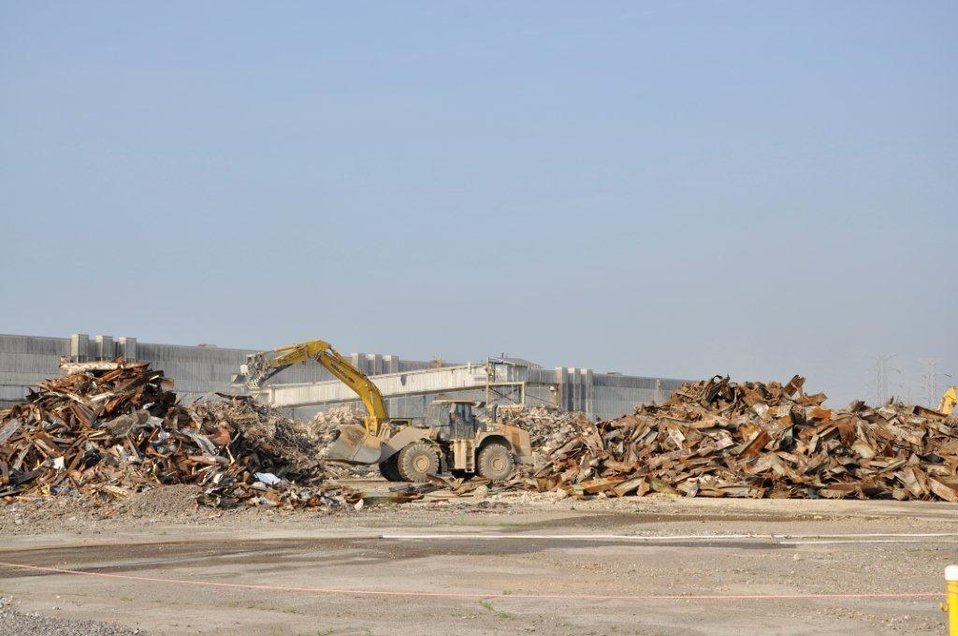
K-33 debris

Debris following demolition of K-33 at Oak Ridge.